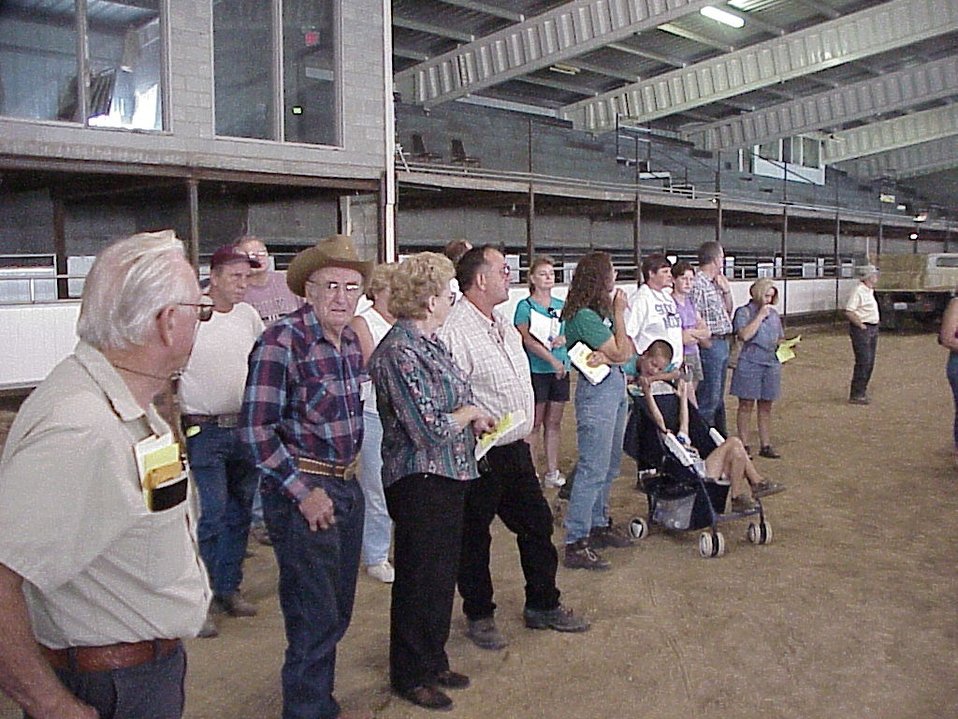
Lewiston Wild Horse and Burro Adoption Program Auction WHB indoor auction Cottonwood Field Office UCSC Upper Columbia Salmon Clearwater District